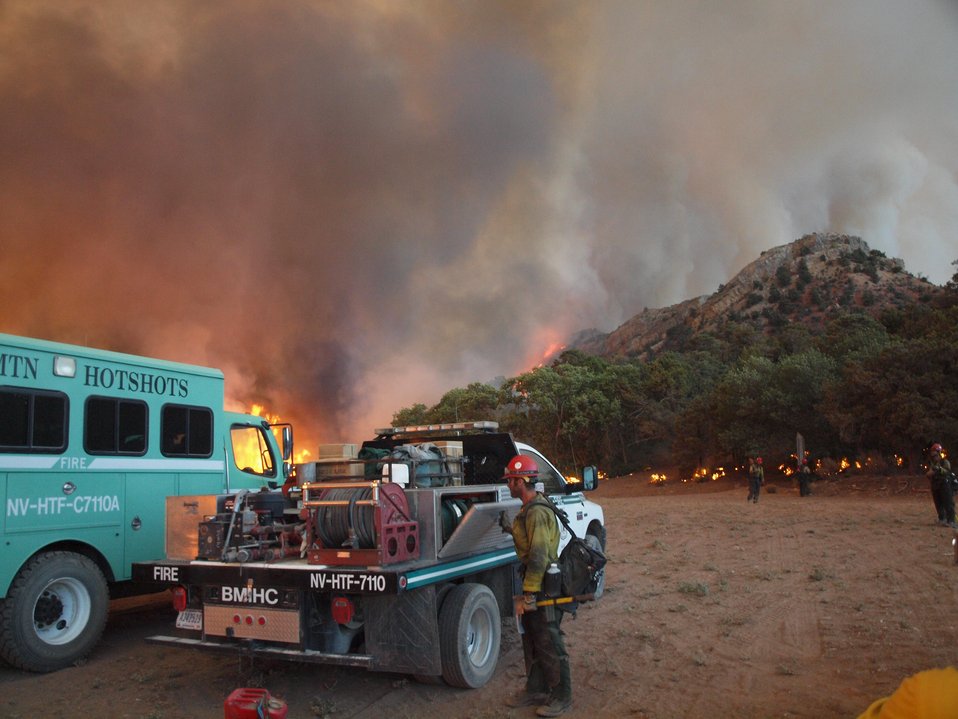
Hotshot fire crew fights Carpenter Fire in the Toiyabe National Forest near Humboldt, NV. The Carpenter Fire in the Toiyabe National Forest near Humboldt, NV was caused by a lightning strike on Jul. 1, 2013. The fire has consumed nearly 27,881acres and is presently 70% contained.